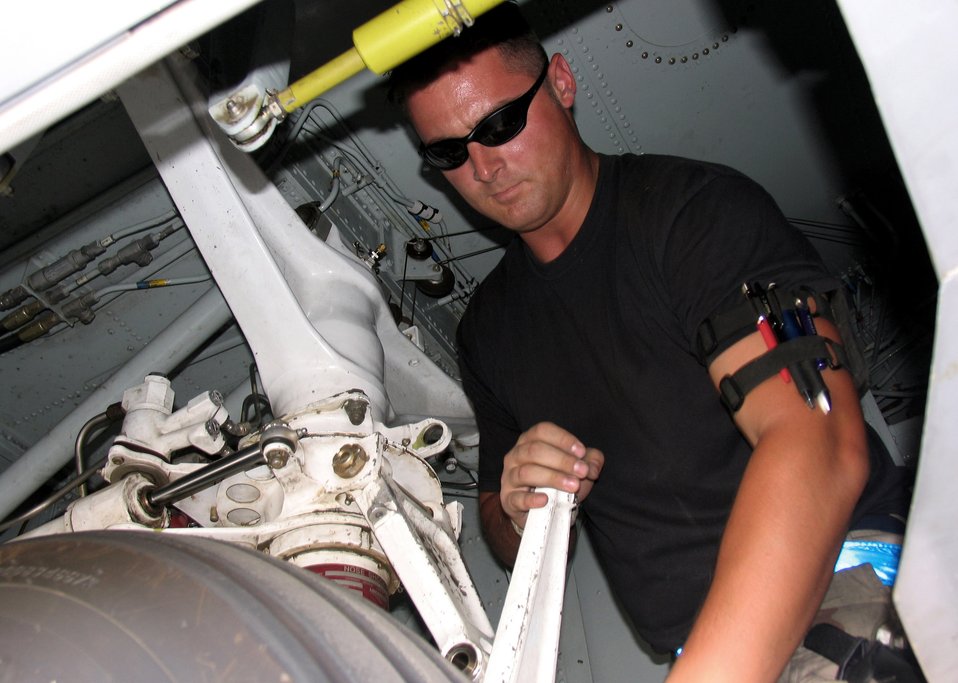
Maintaining the Hercules

Senior Airman Jason Tettmar disconnects the nose gear scissors on an EC-130 Hercules to prepare the aircraft for towing. Airman Tettmar is a crew chief deployed to the 386th Expeditionary Aircraft Maintenance Squadron at a base in Southwest Asia.